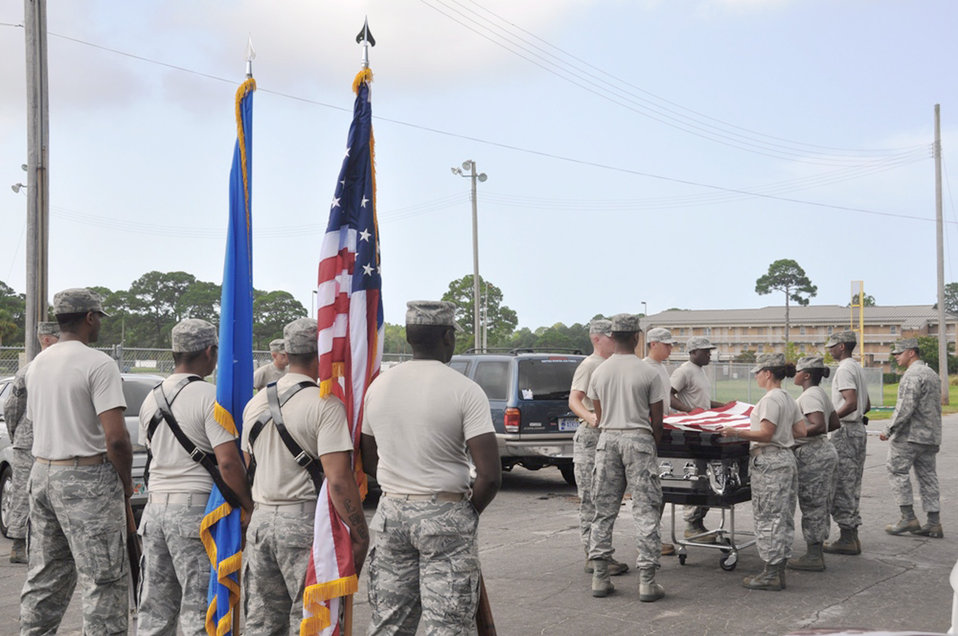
USAF Honor Guard visits Tyndall AFB

Tyndall Air Force Base Honor guard Airmen practice for active-duty funeral ceremonies with instructors from the U.S. Air Force Honor Guard. Airmen participated in a week-long training course to improve their skill and give them the ability to teach others.